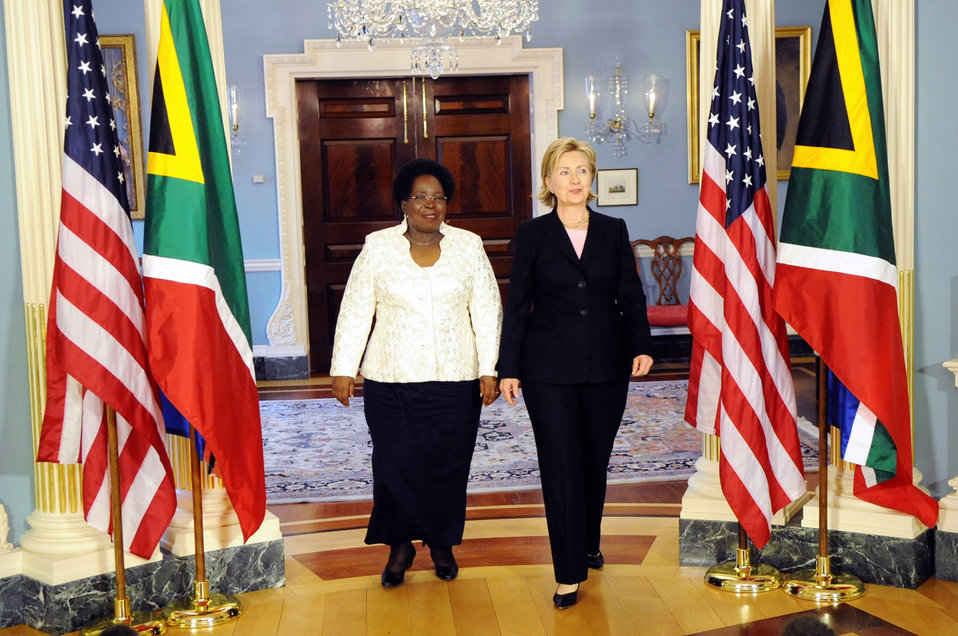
Secretary Clinton Meeting With South African Minister of Foreign Affairs

U.S. Secretary of State Hillary Rodham Clinton during bilateral meeting with South African Minister of Foreign Affairs H.E. Nkosazana Dlamini-Zuma of the Republilc of South Africa in Washington, DC March 19, 2009.